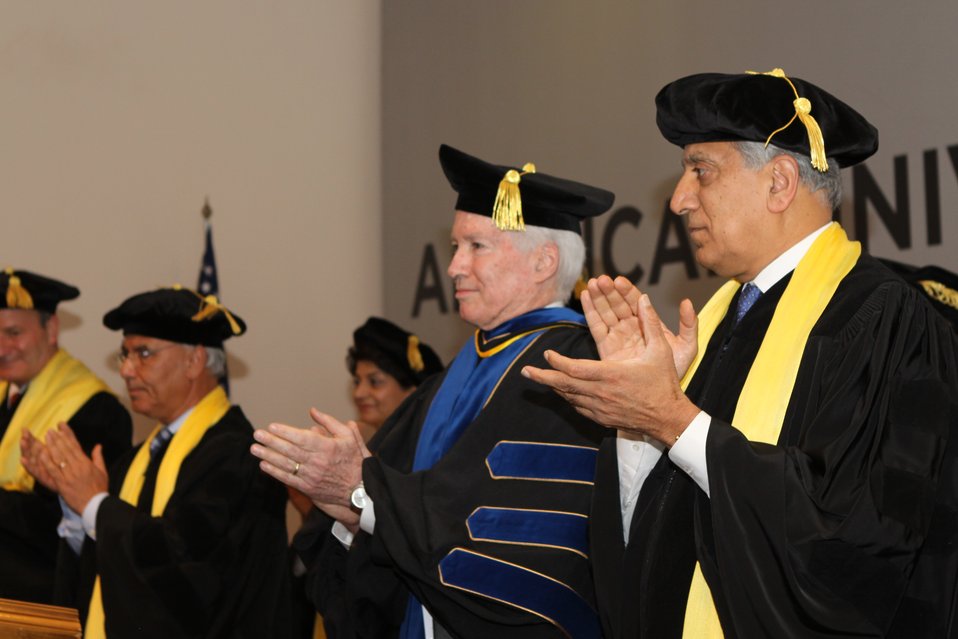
100526 AUAF Graduation 133